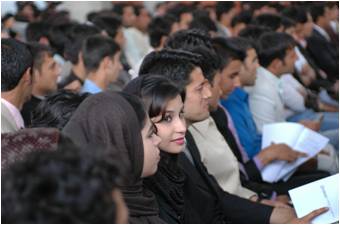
Youth Parliament Takes on Conflict

Eighty-nine young people, including 40 young women, participated in the 2010 Afghanistan Youth Parliament (AYP) session held in June 2010. The three day event, organized by Afghanistan’s National Assembly with the USAID Afghanistan Parliamentary Assistance Project (APAP), convened at Parliament. The agenda focused on conflict management in Afghanistan, while also debating social issues, such as the prohibitive cost of Afghan marriages and how it impacts the youth.

Demonstrating their inclusive thinking and advanced understanding of parliamentary procedures, the student members elected Florence Daqiq as their Speaker, following a no confidence vote in their first choice (the change was prompted by the first speaker’s divisive and inflammatory inaugural speech). Ms. Daqiq’s election demonstrated the confidence the aspiring legislators have in female leadership and the AYP’s commitment to peaceful resolution of differences.

“It was an honor to be elected Speaker of the AYP. I was humbled by the Youth Parliamentarians’ confidence and trust in my leadership to achieve our goals,” said Ms. Daqiq. “My election to the position of Speaker is proof that women have a role to play in the democratization of Afghanistan. Women are capable of holding the same positions as men.”

USAID’s APAP project provided technical assistance to the Youth Parliament, by guiding them through the legislative resolution process, plenary debate, and proper committee hearing procedures. After two plenary sessions, the young legislators applied their new skills to draft and debate a set of resolutions. Their resolutions called for the peaceful resolution of the Afghan conflict through negotiations and a law capping excessive marriage related costs. The Youth Parliament closed by resolving to have their resolutions forwarded to the National Assembly for consideration.

“The AYP program taught me to be tolerant of other people’s ideas. Through peaceful debate; we can resolve and settle our differences. I hope the National Assembly will take our resolutions seriously,” said Ms Daqiq at the end of the session.